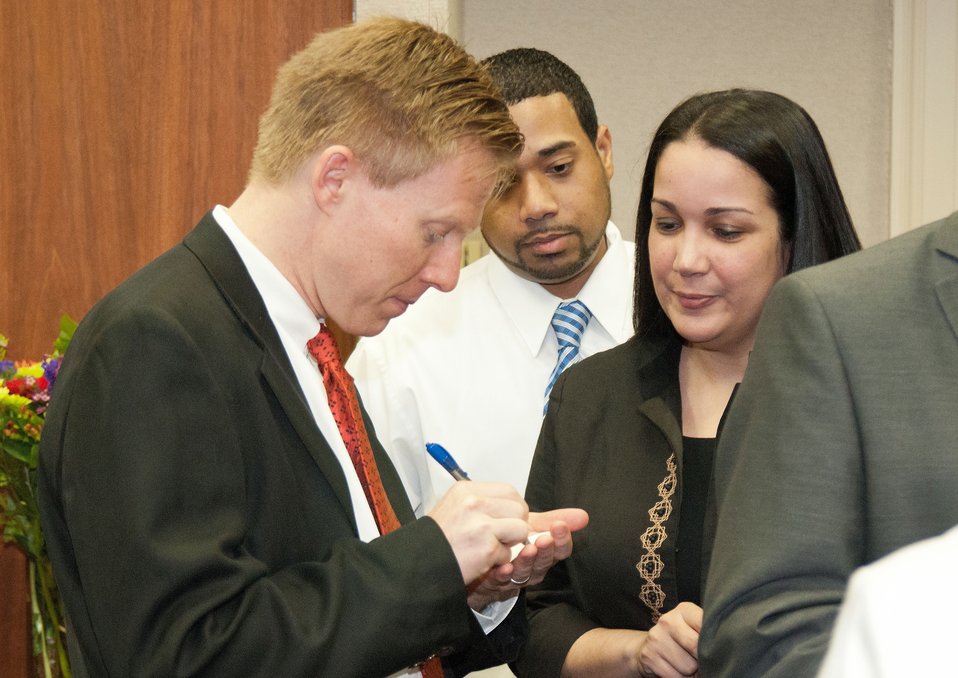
Max Finberg (left), Director, Center for Faith Based and Neighborhood Partnerships and Nancy Cubano (right), Director, Spanish Language Department at Kipp High School, Philadelphia, Pennsylvania network at the 2012 White House Champions of Change Breakfast Reception sponsored by the Office of Advocacy and Outreach and Office of the Assistant Secretary for Civil Rights at the United States Department of Department of Agriculture In Washington, D.C., on Thursday, March 29, 2012. They were being recognized for their leadership, community service and service to others prior to being honored at the White House in Honor of Cesar Chavez Day. Chavez was a Mexican-American labor leader who used non-violent methods to fight for the rights of migrant farm workers in the southwestern United States. Chavez founded the Cesar Chavez Foundation, a group that advocates for the rights of farm workers, acting to increase wages and improve the working conditions and safety of farm workers.USDA Photo by Bob Nichols.